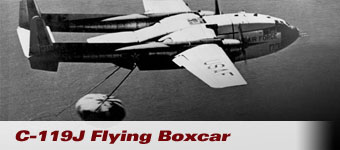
Catch a Falling Star

A specially fitted C-119J Flying Boxcar made the first successful aerial retrieval of an orbiting capsule. The capsule was ejected by Discoverer XIV.